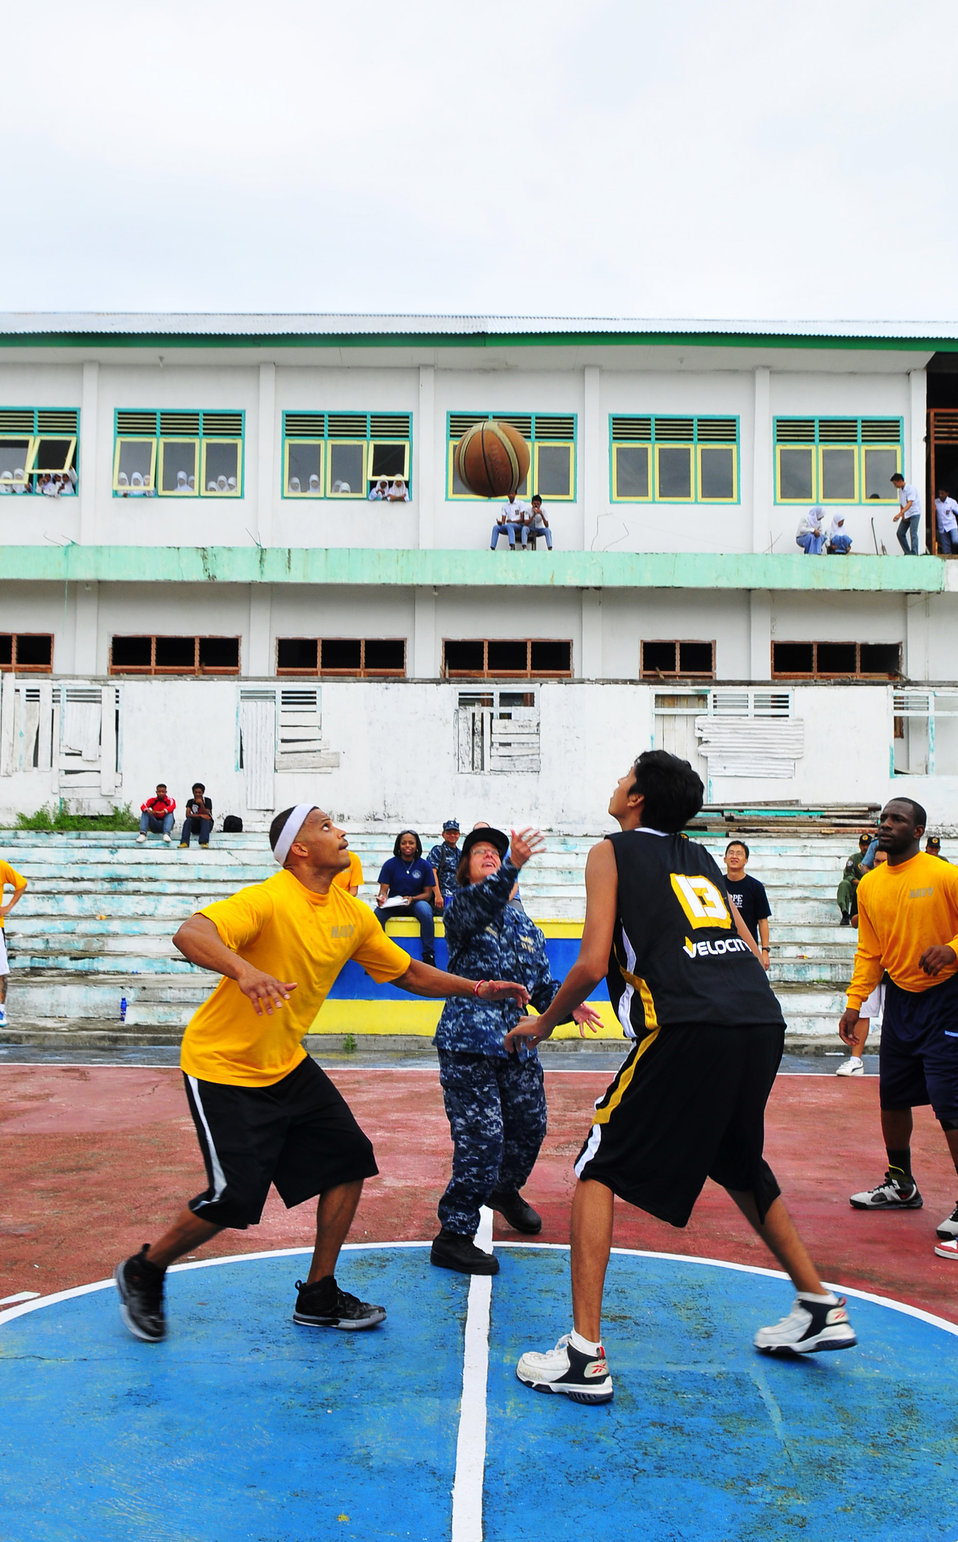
PP2010 Commander Capt. Franchetti Throws a Basketball Up at Midcourt

Pacific Partnership 2010 Commander Capt. Lisa M. Franchetti throws a basketball up at midcourt to start the game between Sailors from the Military Sealift Command hospital ship USNS Mercy (T-AH 19) and players from the Pangasila Ballers team on July 21, 2010, in Ternate, Indonesia. Mercy is deployed for Pacific Partnership 2010, the fifth in a series of annual U.S. Pacific Fleet endeavors conducted in Indonesia as a disaster relief exercise aimed at strengthening regional partnerships.